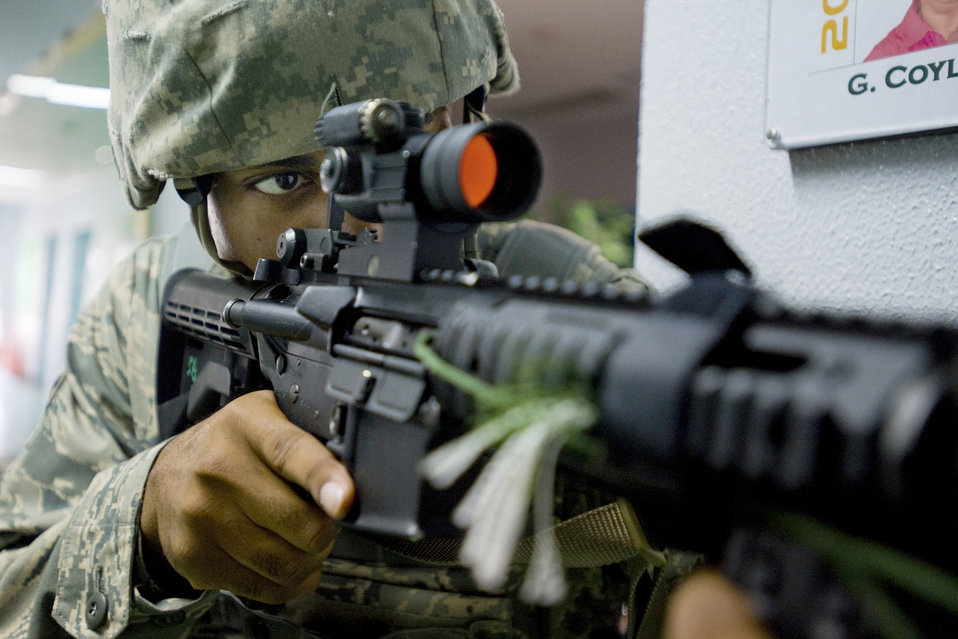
Security forces Airmen, Sailors learn new active shooter techniques

Airman 1st Class Steven Howard Jr. performs rear security during high-risk response training July 22, 2010, at Misawa Air Base, Japan. The five-day program was also a train-the-trainer course, allowing 35th Security Forces Squadron Airmen to take their newly learned skills and share their knowledge with co-workers. Airman Howard is a patrolman assigned to the 35th Security Forces Squadron at Misawa Air Base, Japan.